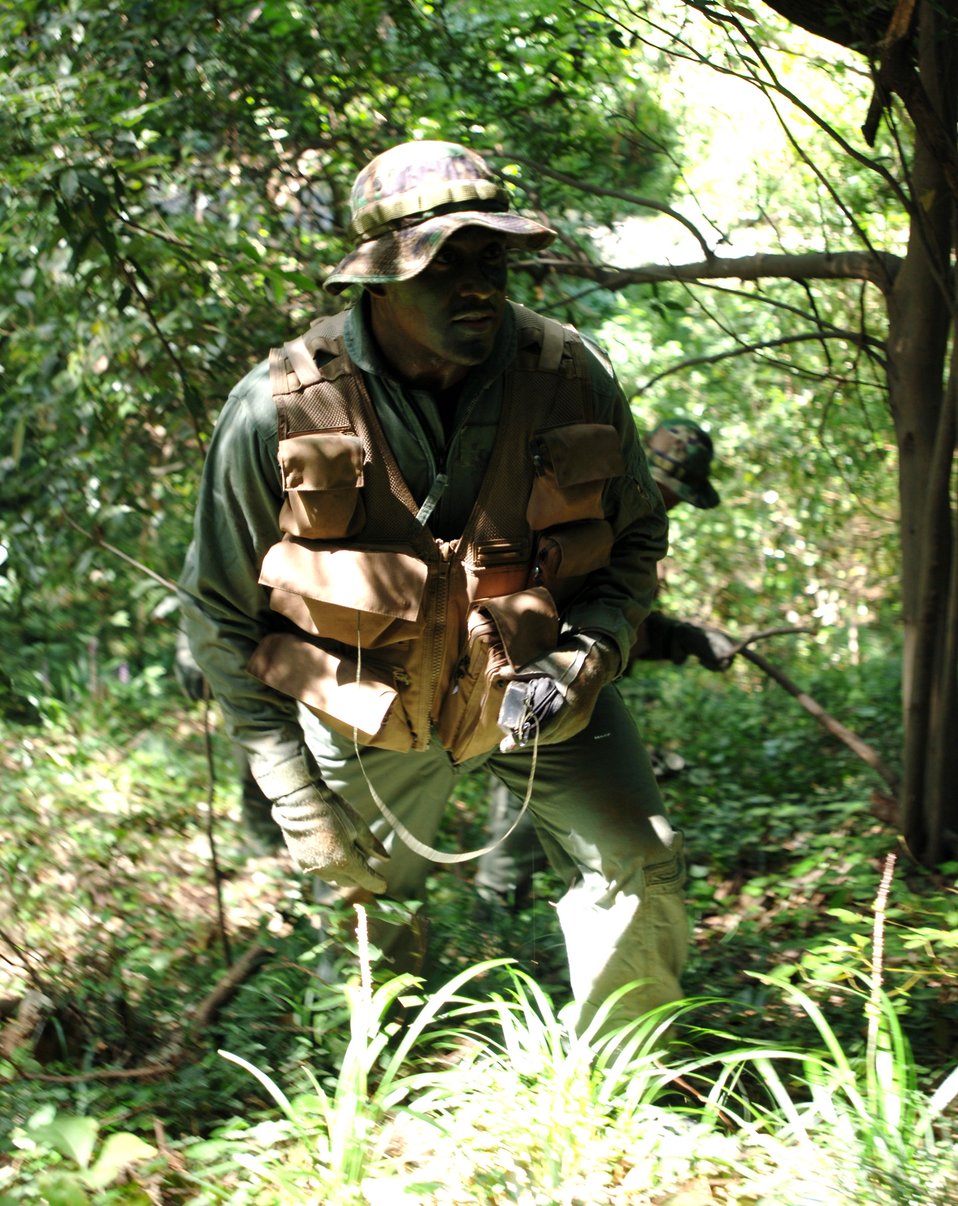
Playing with the enemy

YOKOTA AIR BASE, Japan -- Tech. Sgt. C.J. McClain evades enemy forces after his aircraft was